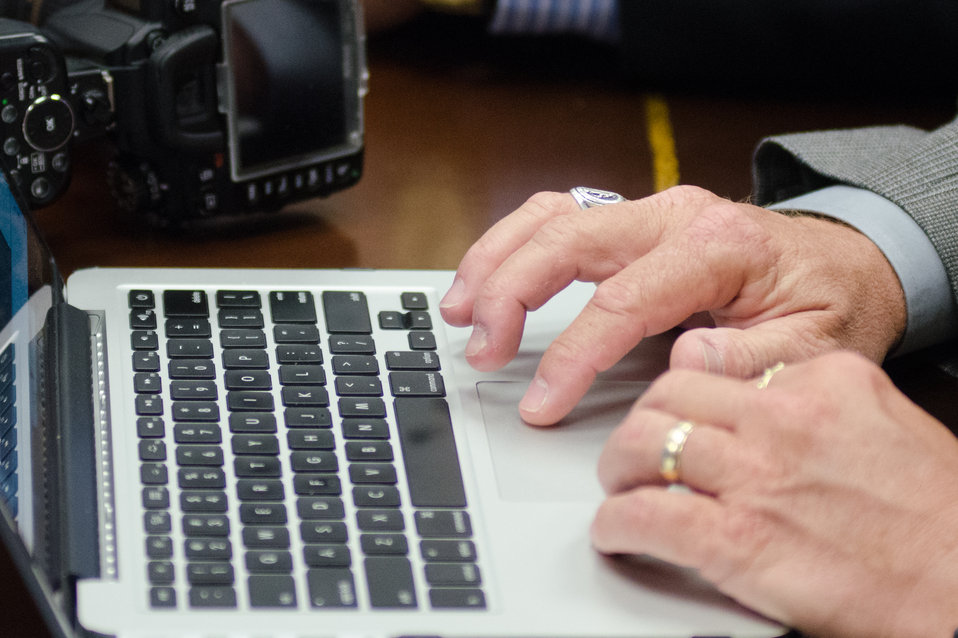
A farm broadcaster downloads a camera memory card and transmits a photo of Agriculture Secretary Tom Vilsack, during a meeting at the U.S. Department of Agriculture (USDA) on Tuesday, May 14, 2013, in Washington, D.C.